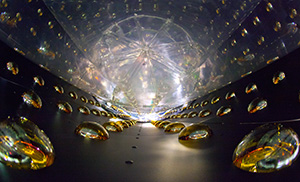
Photomultiplier tubes lining the walls of the Daya Bay Neutrino Detector at Brookhaven National Laboratory.

The tubes are designed to amplify and record the faint flashes of light that signify an antineutrino interaction. The lab's chemistry and physics departments have major leadership roles in the Daya Bay experiment, from designing to the detectors all the way through to analysis of the data gathered.